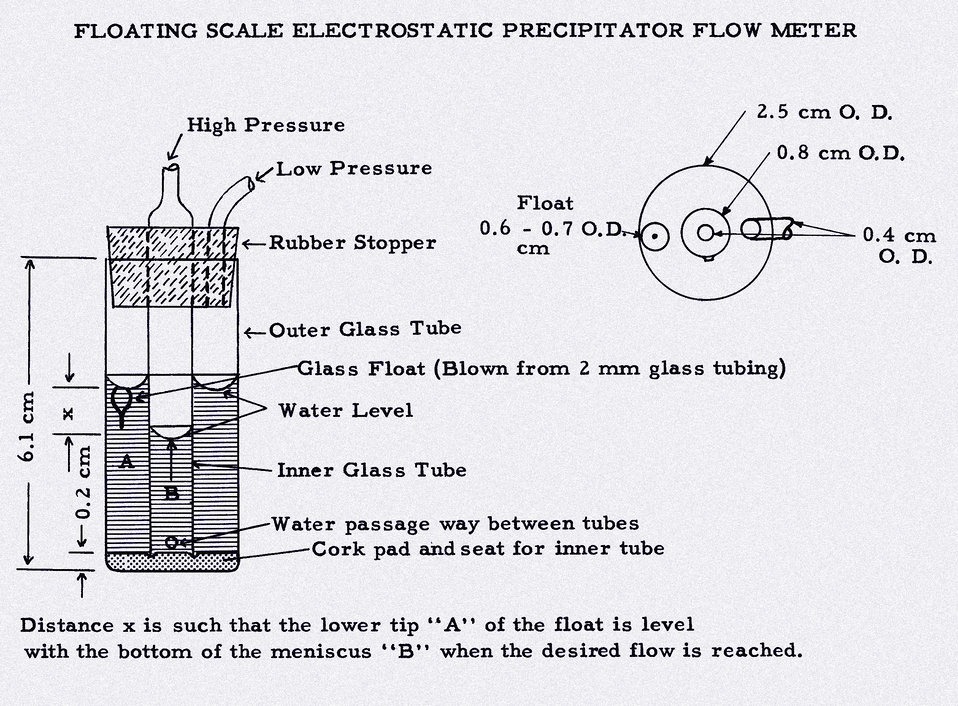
This historical drawing, provided by the Center for Disease Control's (CDC), National Institute for Occupational Safety and Health (NIOSH), detailed a design for a floating-scale electrostatic precipitator flow meter. Electrostatic precipitators are used to catch loose airborne particles leftover from incomplete industrial burning processes such as those which take place in coal-fired electrical power plants. By electrically charging, or 'ionizing' the particles, the positively-charged particles then move toward negatively-charged collecting electrodes, where they are trapped. The particles adhere to the collection plates and build up into larger particles. The plates are then tapped, or 'rapped', which loosens the partcles that then fall into hoppers for collection and disposal. The flow meter design is an example of a measure meant to improve workplace safety through the accurate measurement of air quality.